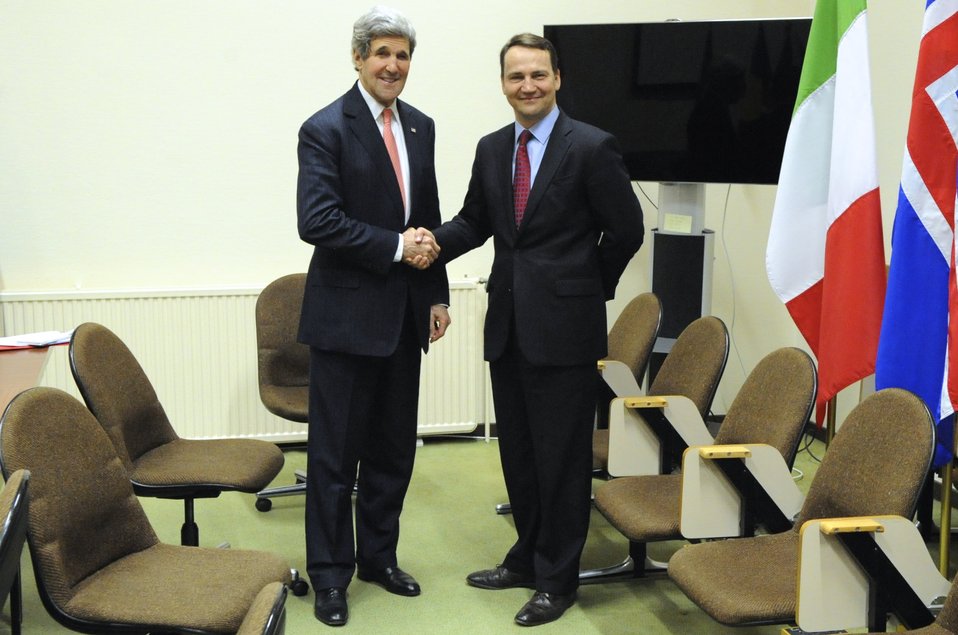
Secretary Kerry Poses With Polish Foreign Minister Sikorski in Brussels

U.S. Secretary of State John Kerry poses with Polish Foreign Minister Radoslaw Sikorski before a meeting on the sidelines of a NATO Ministerial Meeting in Brussels, Belgium, on April 2, 2014.